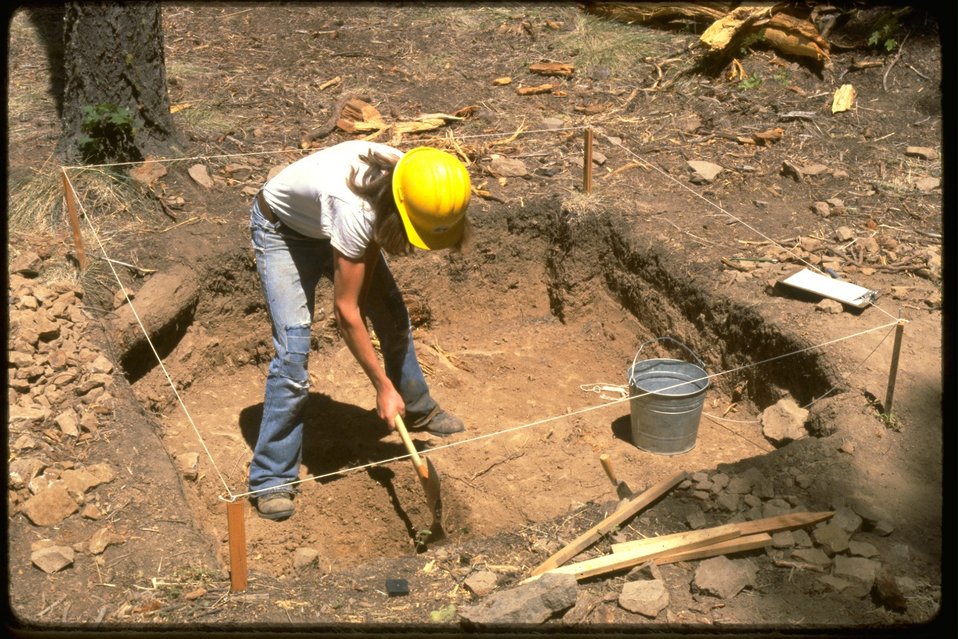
Archaeological Dig